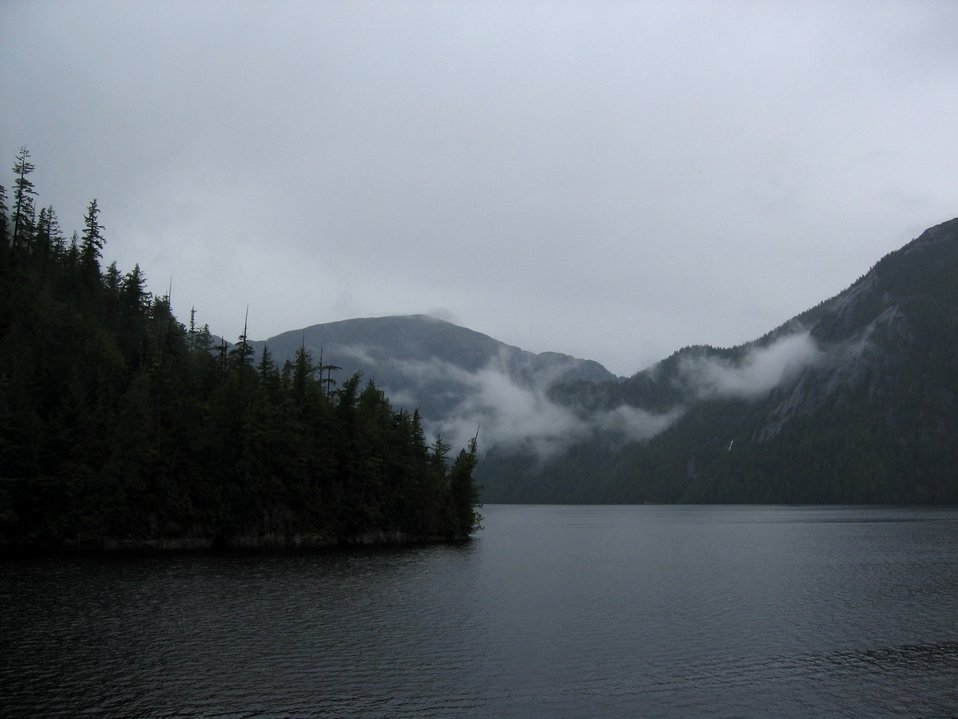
Vistas of mountain, mist, and sea.